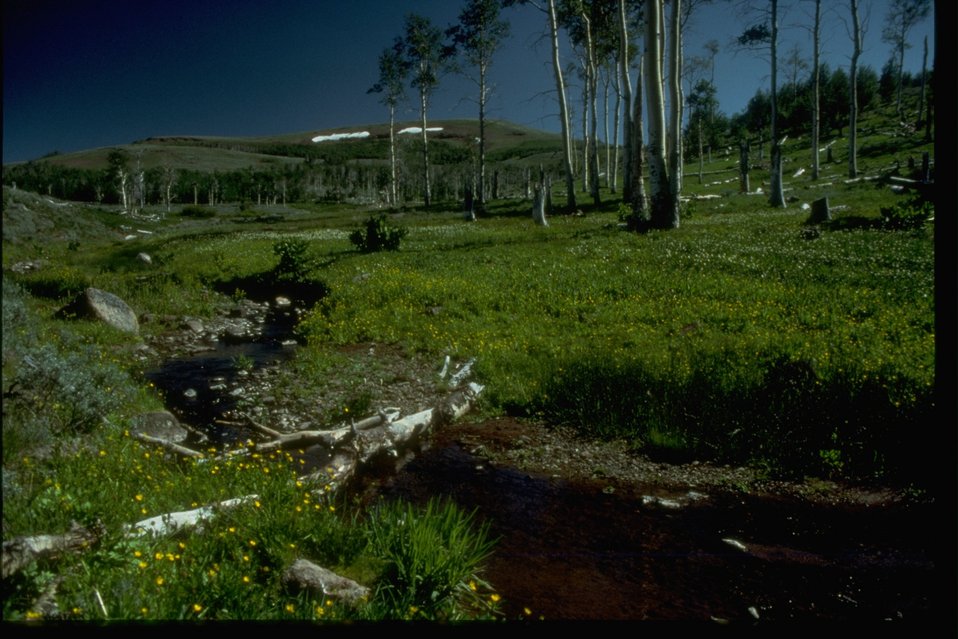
Riparian area around stream through mountain meadow of the Trout Creek Mountains, OR.